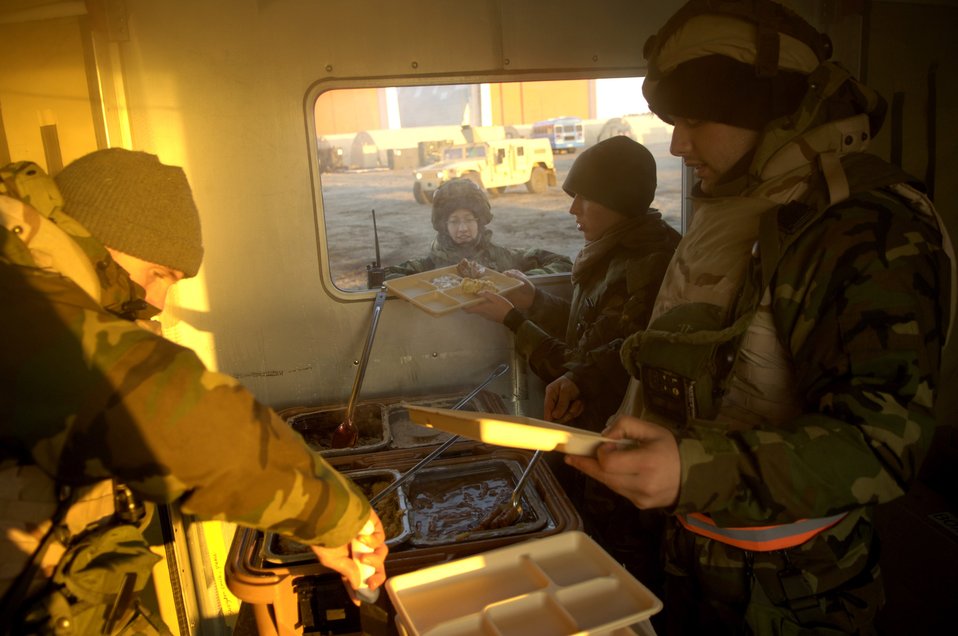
Breakfast is served

Eagle Flag participants serve morning breakfast from a field kitchen at the 421st Air Expeditionary Group camp for Air Force Exercise Eagle Flag 08-2 Jan. 24 at Lakehurst, N.J.